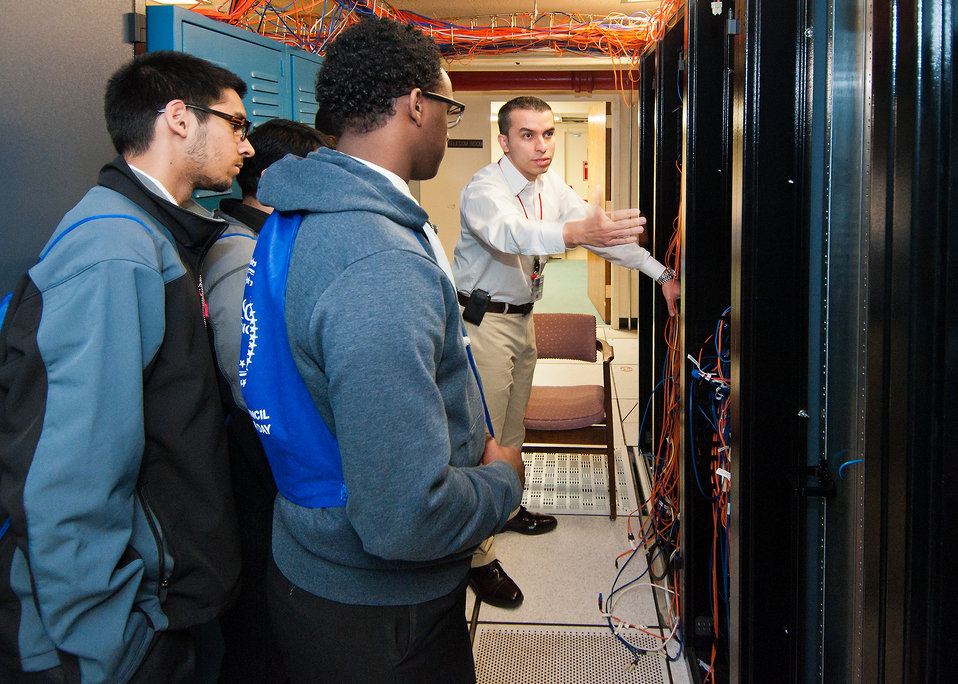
U. S. Department of Agriculture (USDA) Network Operations Center employee Nelson Flores explains the network architecture to students from Edison Academy in Fairfax, VA USDA Information Technology (IT) Job Shadow Day held by the USDA Office of the Chief Information Officer (OCIO) to introduce local high school students to careers in information technology in Washington, D.C. on Tuesday, Apr. 2, 2013.